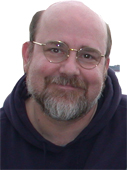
Jahan Salehi, photographed in Naples, Italy. Released into the public domain.